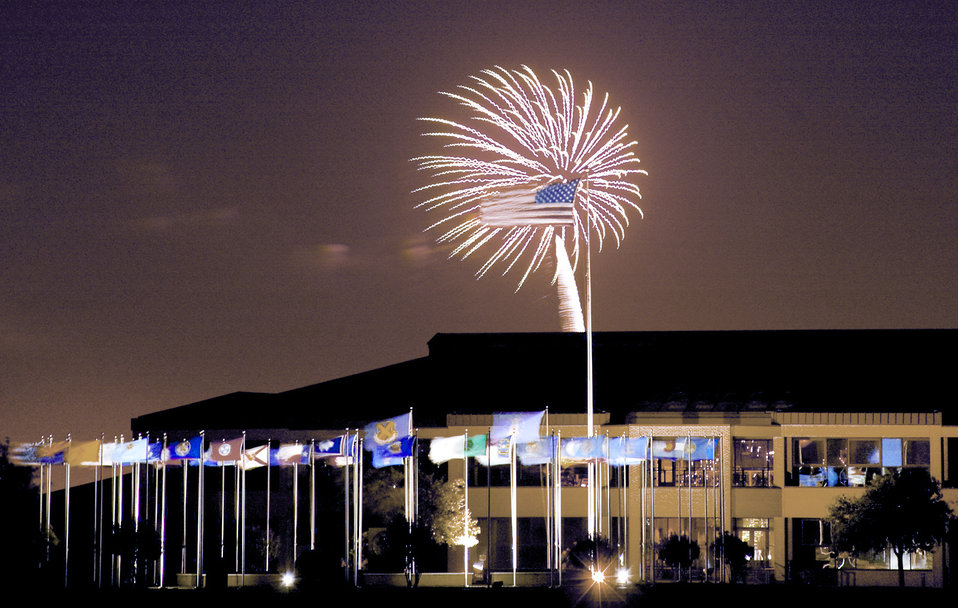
Fireworks light up the night...

A fireworks extravaganza lights up the sky July 4, 2009, at Lackland Air Force Base, Texas, as the 31st annual Star Spangled Festival wraps up. An estimated 25,000 people attended the celebration.